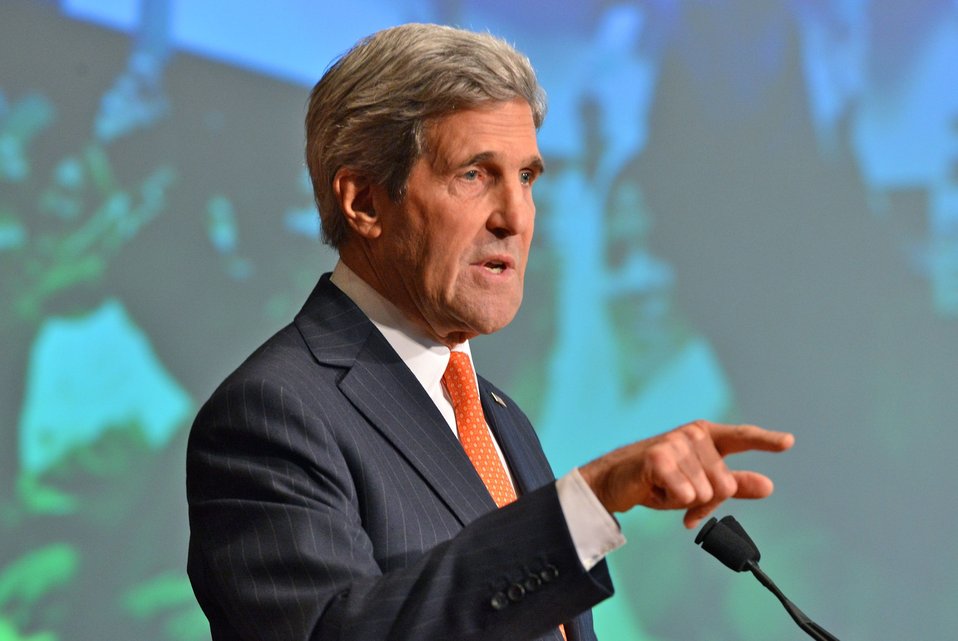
Secretary Kerry Delivers Remarks on Afghan Women

U.S. Secretary of State John Kerry delivers remarks at the Georgetown University Symposium “Advancing Afghan Women: Promoting Peace and Progress in Afghanistan” co-hosted by Former U.S. Secretary of State Hillary Clinton and Former First Lady Laura Bush, at Georgetown University in Washington, D.C., on November 15, 2013.